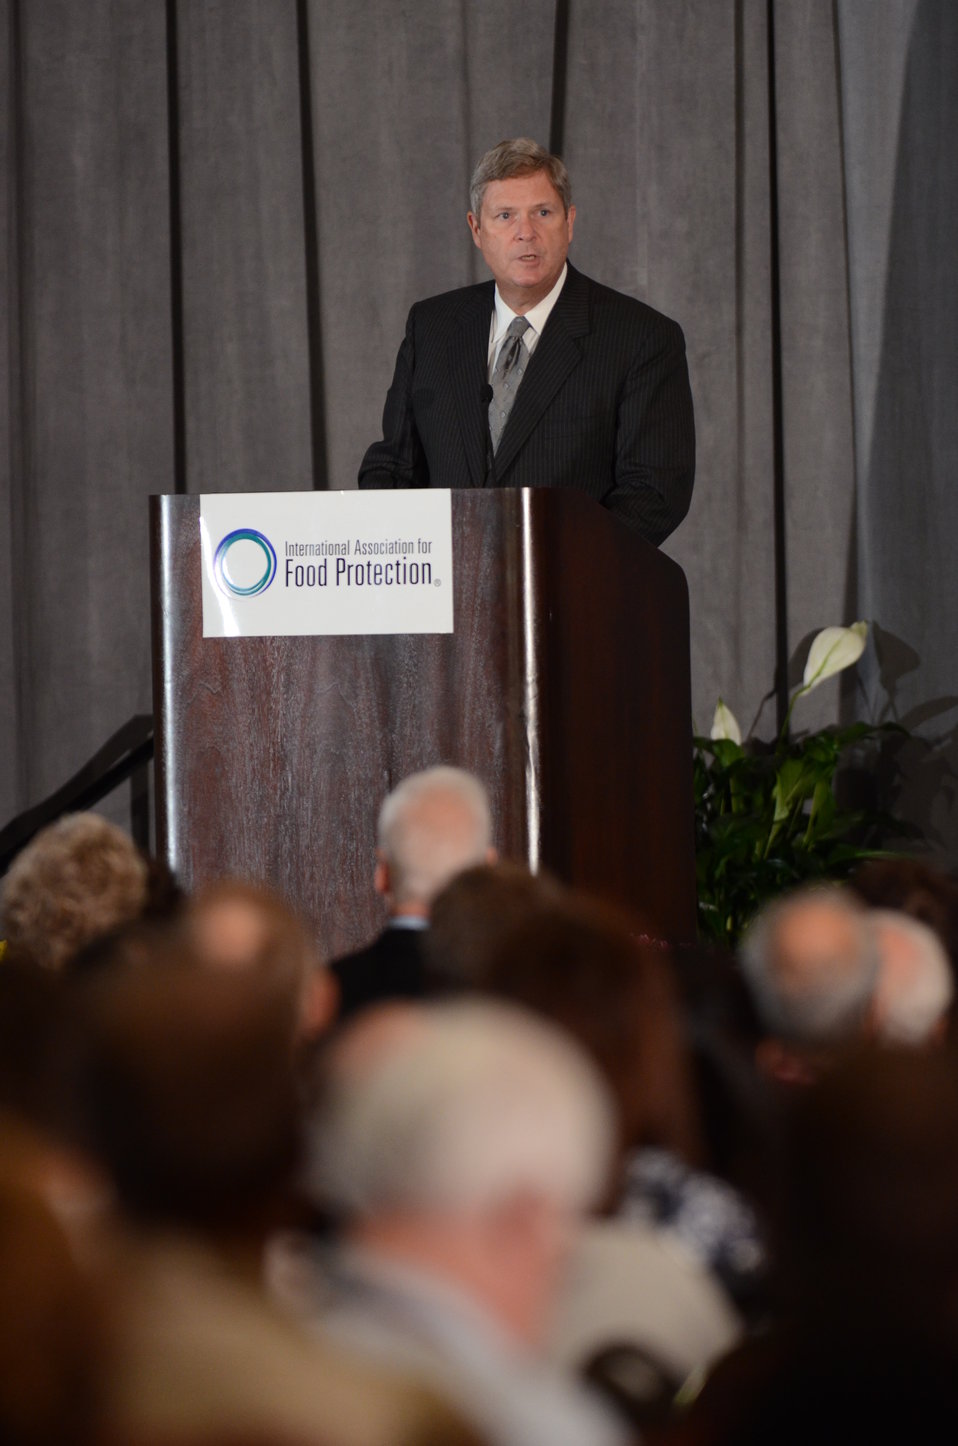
Agriculture Secretary Tom Vilsack speaks at the International Association for Food Protection (IAPP) 100th annual meeting in Milwaukee, WI, on Wednesday, August 3, 2011. IAPP is committed to providing members worldwide with a forum to exchange information on protecting the global food supply.